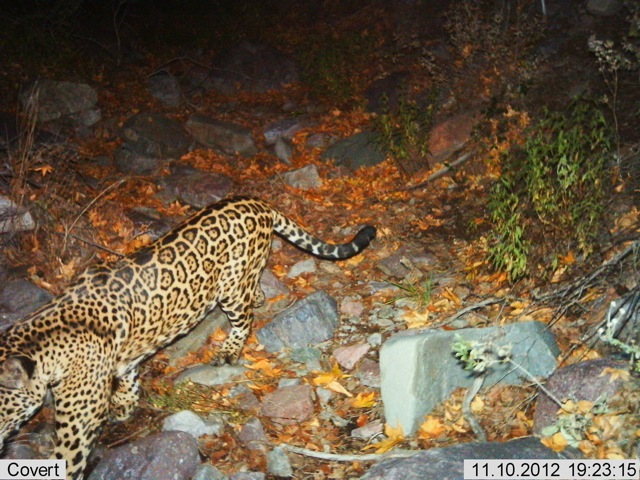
Male jaguar photographed by automatic wildlife cameras in the Santa Rita Mountains on Nov 10, 2012 as part of a U.S. Fish and Wildlife Service/Department of Homeland Security-funded jaguar survey conducted by University of Arizona. One of two photos taken the same night in two different locations.